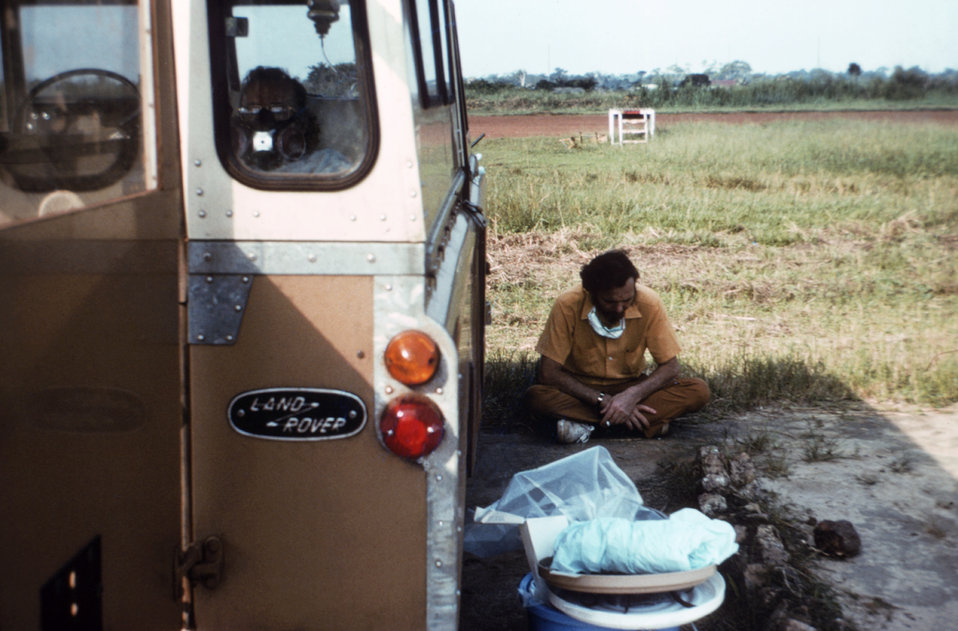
This 1976 photograph, taken in Bumba, Zaire, showed CDC's Dr. Karl M. Johnson seated, while facing another major set back in transporting suspected Ebola victim, Del Conn.